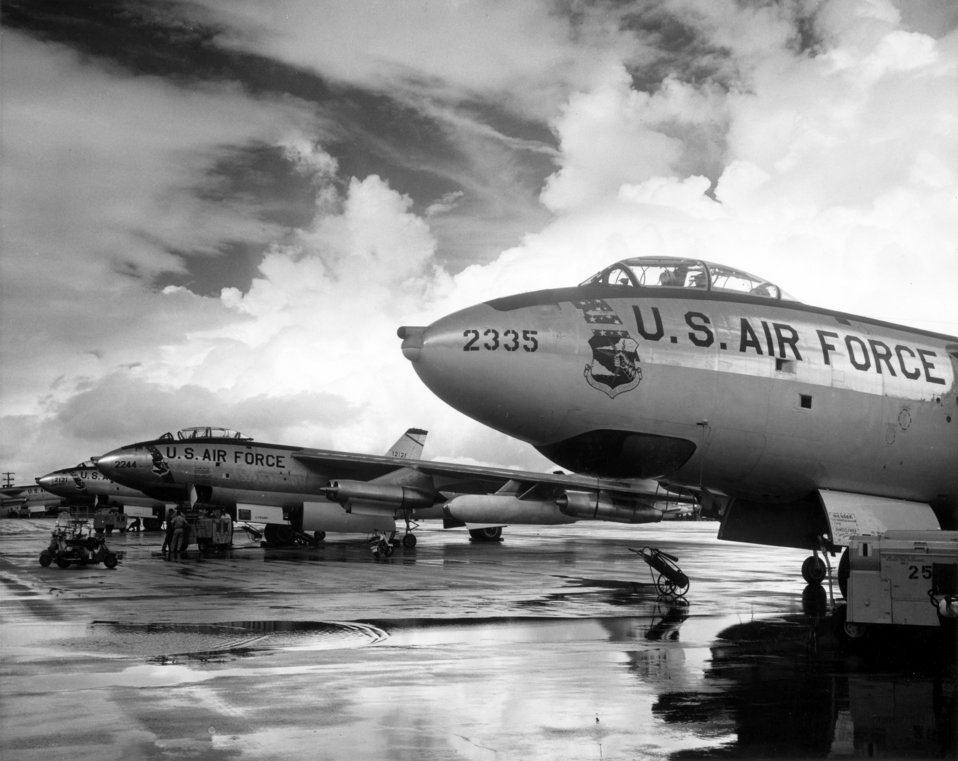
B-47

1950's -- Strategic Air Command B-47 Stratojet bombers. The world's first swept-wing bomber. The B-47 normally carried a crew of three--pilot, copilot , and an observer who also served as navigator, bombardier and radar operator.